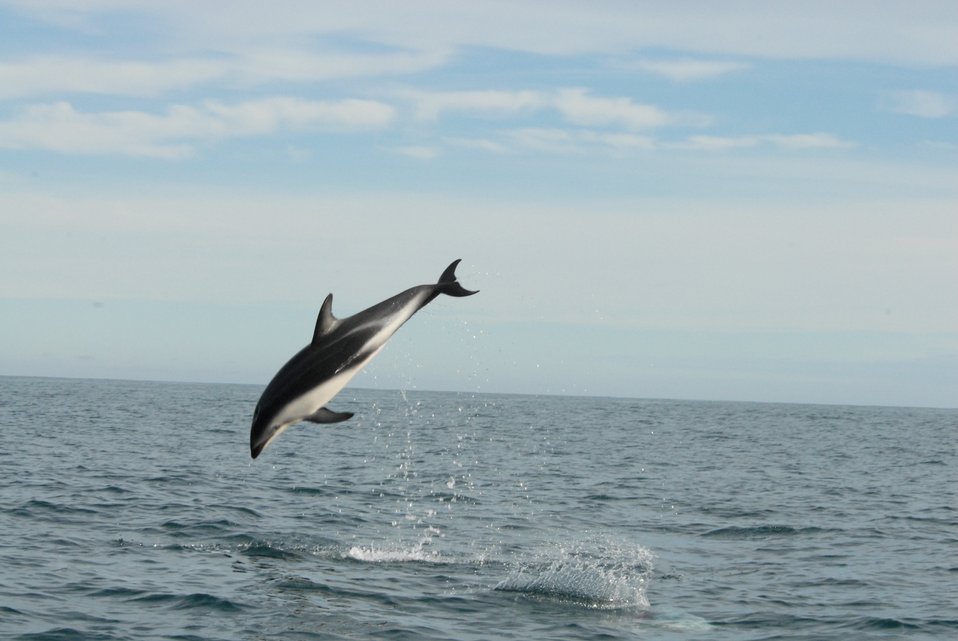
Dusky dolphin (Lagenorhynchus obscurus)